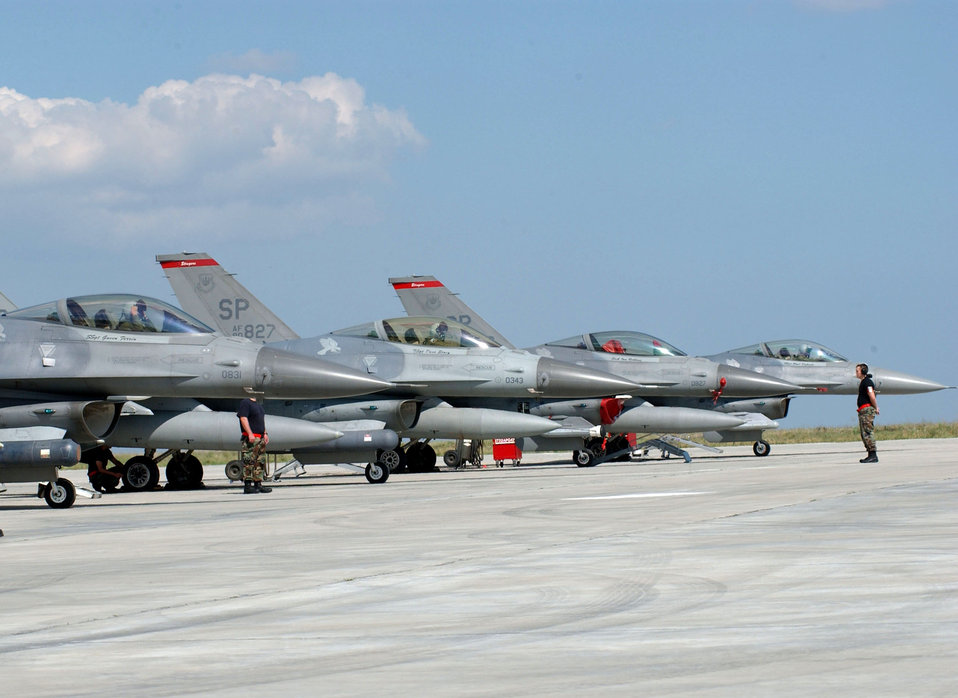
Viper Lance 2006

F-16 Fighting Falcons from Spangdahlem Air Base, Germany, are ready for their first mission against the Romanian air force's MiG 21 Lancers at Exercise Viper Lance 2006 at Mihail Kogalniceanu Air Base, Romania, on Aug. 9. This is the first time F-16 crews have trained in Romania.